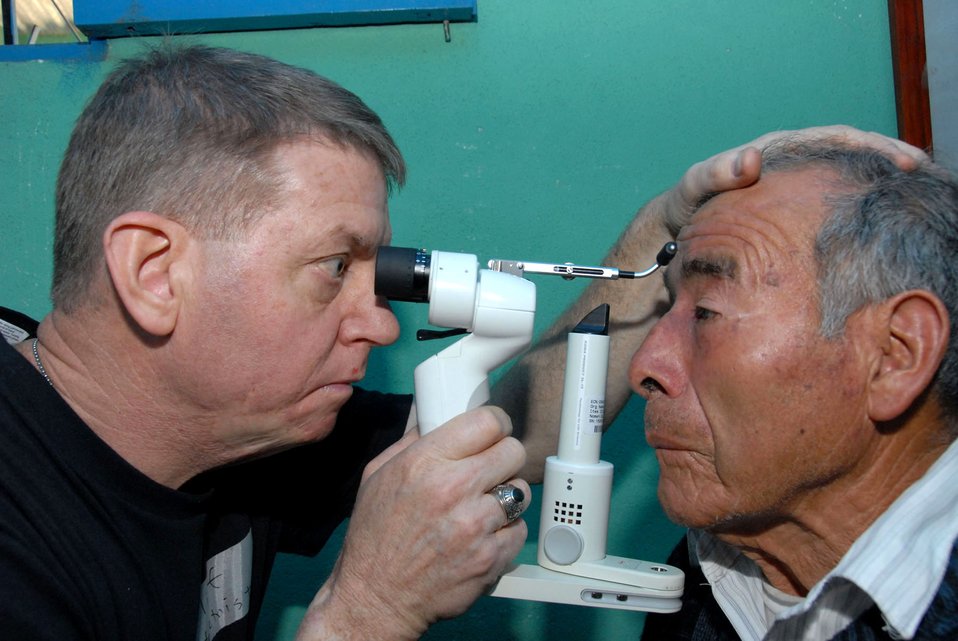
Reservists take medical care to Guatemalans

Lt. Col. (Dr.) Clifton Poling examines the eyes of a Guatemalan patient for cataract evaluation with a hand held slit lamp during the New Horizons Medical Readiness Training Exercise conducted April 14 through 28 in the region of San Marcos, Guatemala. More than 750 pair of presription eyeglasses were given during the exercise. Colonel Poling is an optometrist with the 445th Aerospace Medicine Squadron, Wright Patterson Air Force Base, Ohio.